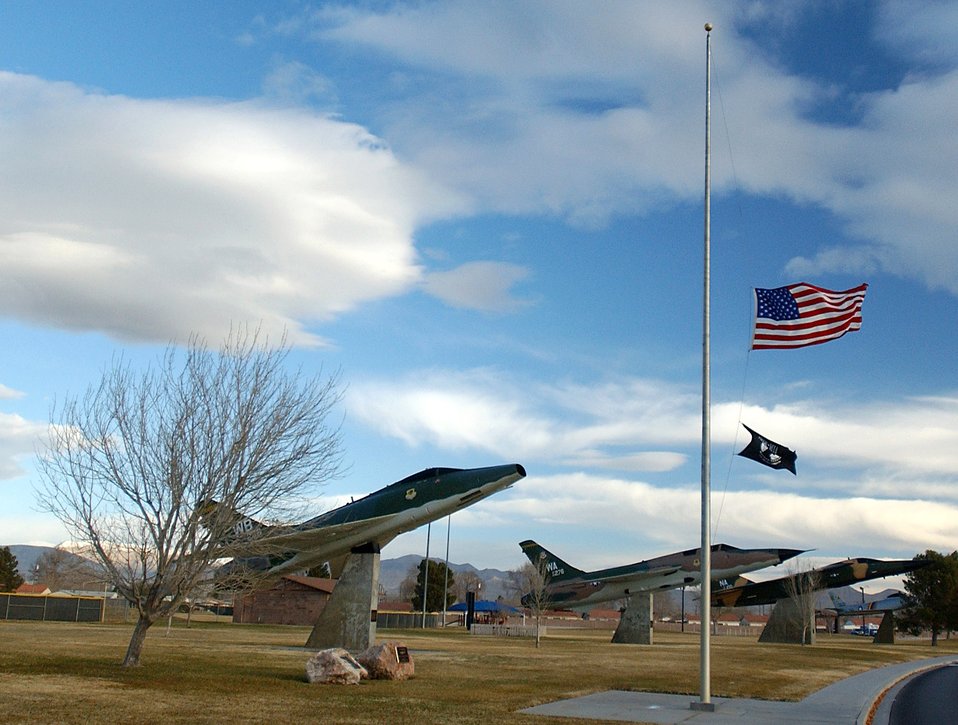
Nellis flies flag at half staff for Ford

In honor of former President Gerald Ford, who passed away Dec. 26, an American flag flies at half staff Dec. 28 at Nellis Air Force Base, Nev. President Ford's final resting place will be on the grounds of the Gerald R. Ford Presidential Museum in Grand Rapids, Mich., the president's hometown.